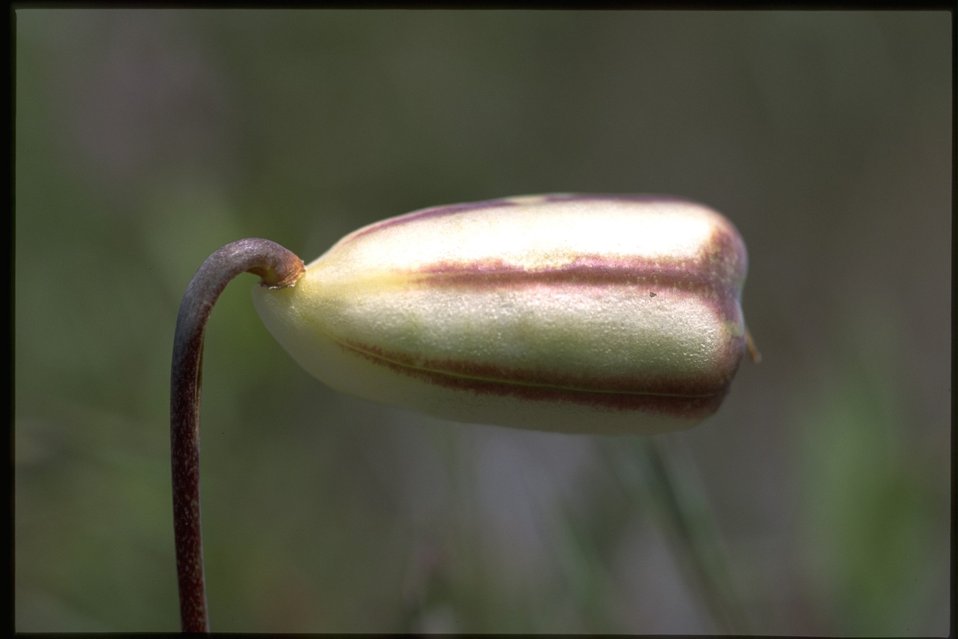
Closeup of Fritillaria pudica fruits.